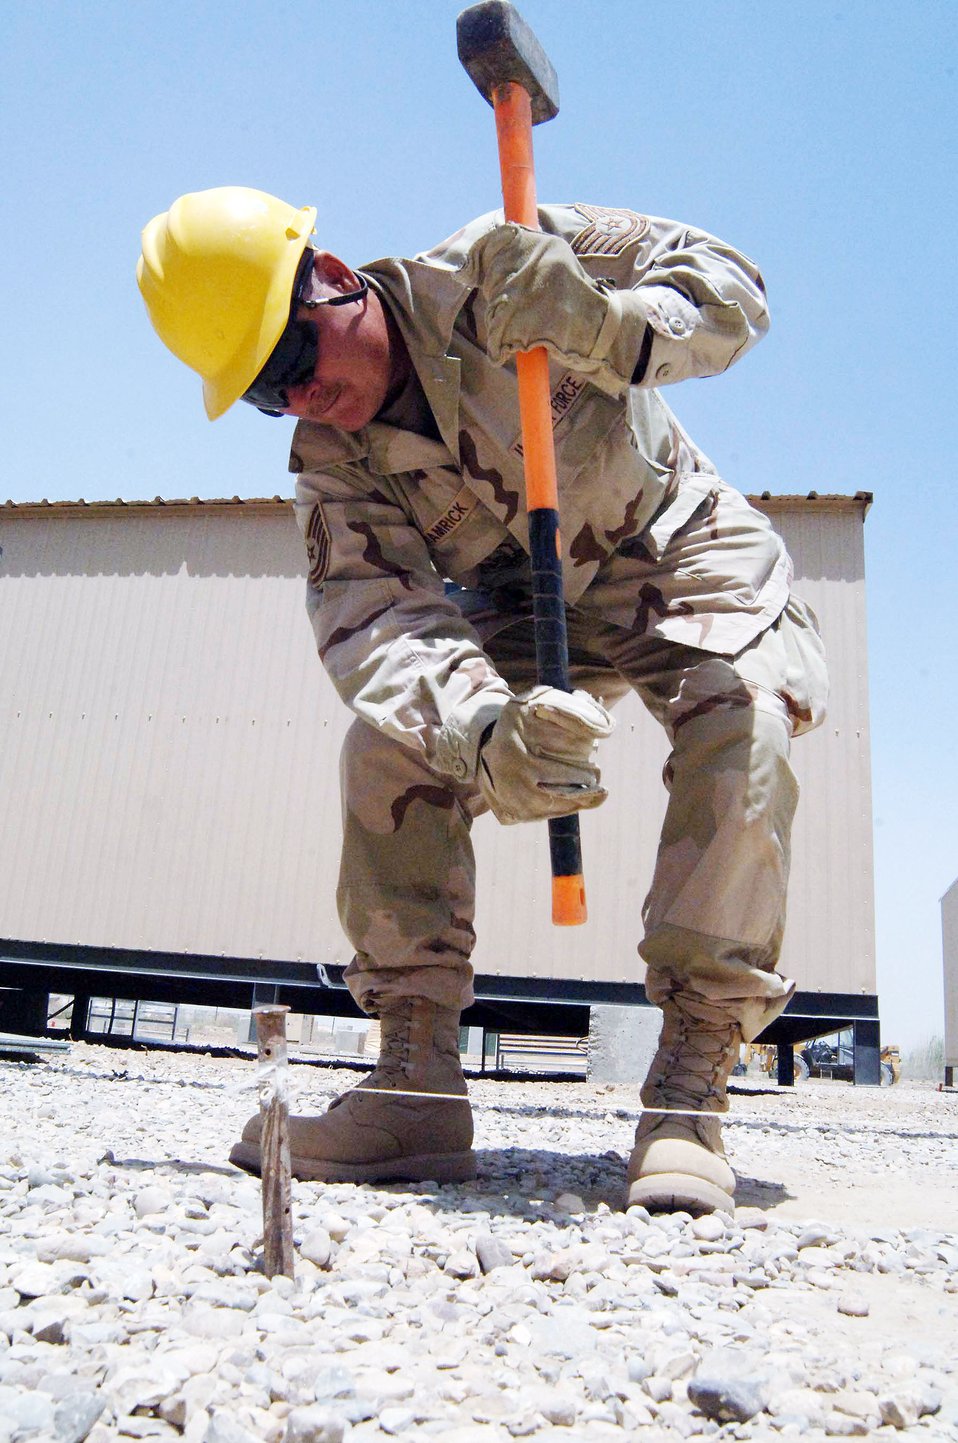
Concrete barriers save lives

Tech. Sgt. Scott Hamrick pounds a stake in the ground used for lining up T barriers June 27 at Sather Air Base, Iraq. The barriers are part of a concrete wall being pieced together for protection against incoming rockets and mortars. Sergeant Hamrick is a pavement specialist with the 447th Expeditionary Civil Engineer Squadron.